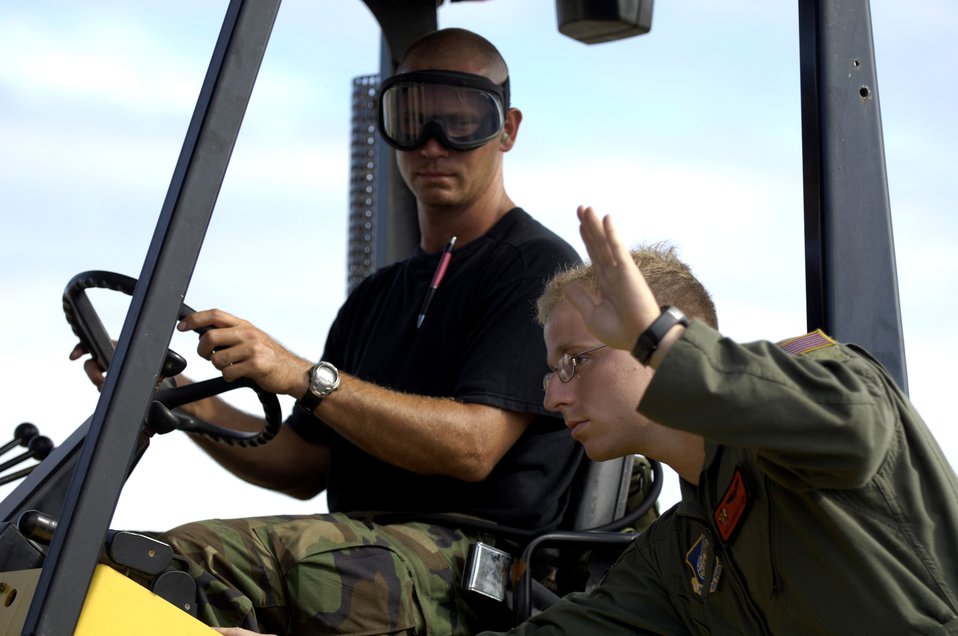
Hickam team begins Wake Island assessment

Airman 1st Class Charles Gibb directs a forklift driven by Tech. Sgt. Nathan Bloodworth to the back of a C-17 Globemaster III to download equipment pallets on Wake Island Sept. 12. The C-17 brought a 53-person team to assess damage left by Super Typhoon Ioke after it struck the island Aug. 31. Airman Gibb is with the 535th Airlift Squadron at Hickam Air Force Base, Hawaii; Sergeant Bloodworth is with the 36th Contingency Response Group at Andersen AFB, Guam.